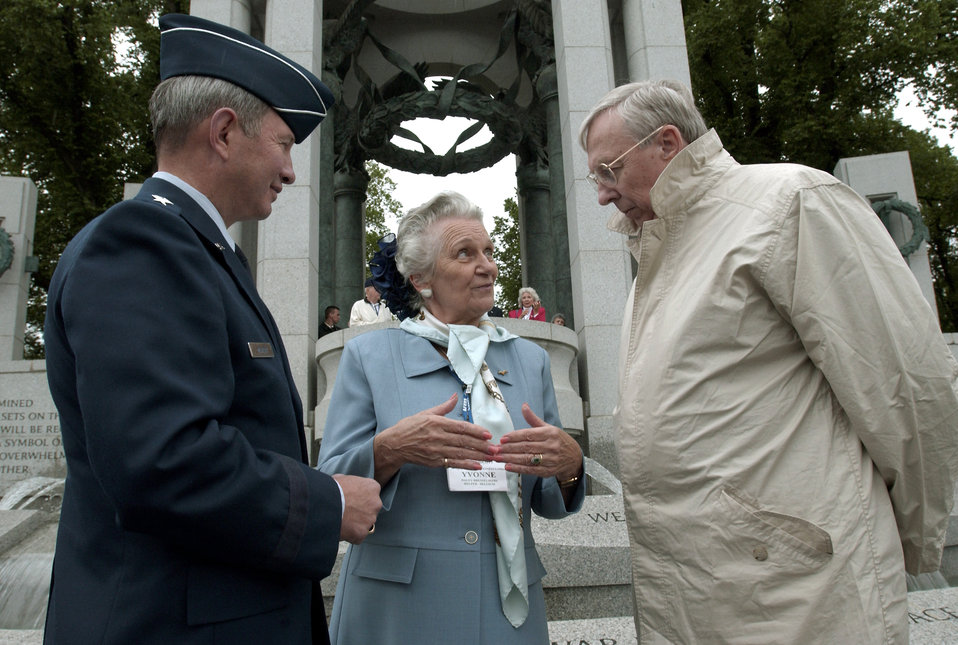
Air Force Escape and Evasion Society

WASHINGTON -- Secretary of the Air Force Dr. James G. Roche (right) visits with Yonne Daley (center) and Lt. Gen. Duncan J. McNabb, deputy chief of staff for plans and programs, while at the newly opened World War II Memorial here May 3. Ms. Daley who had organized the tour and General McNabb, who sponsored the group, were with members of the Air Forces Escape and Evasion Society. The society comprises both U.S. Airmen who successfully evaded capture after bailing out of their aircraft over Europe in World War II and a number of the European civilians who helped them.